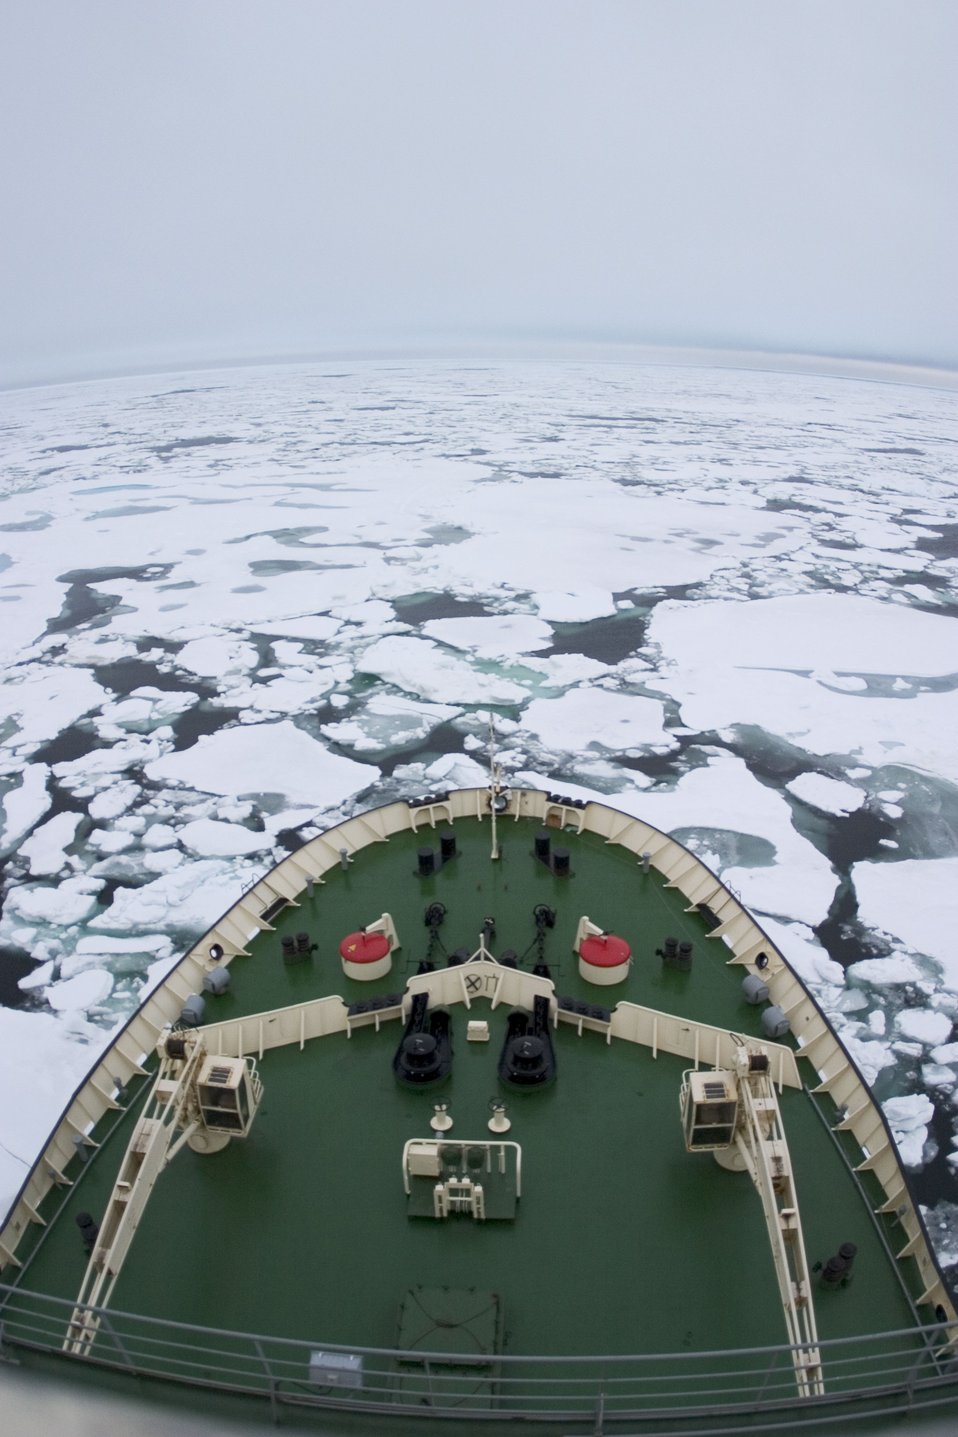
The KAPITAN DRANITSYN encounters its first sea ice during NABOS 2006.